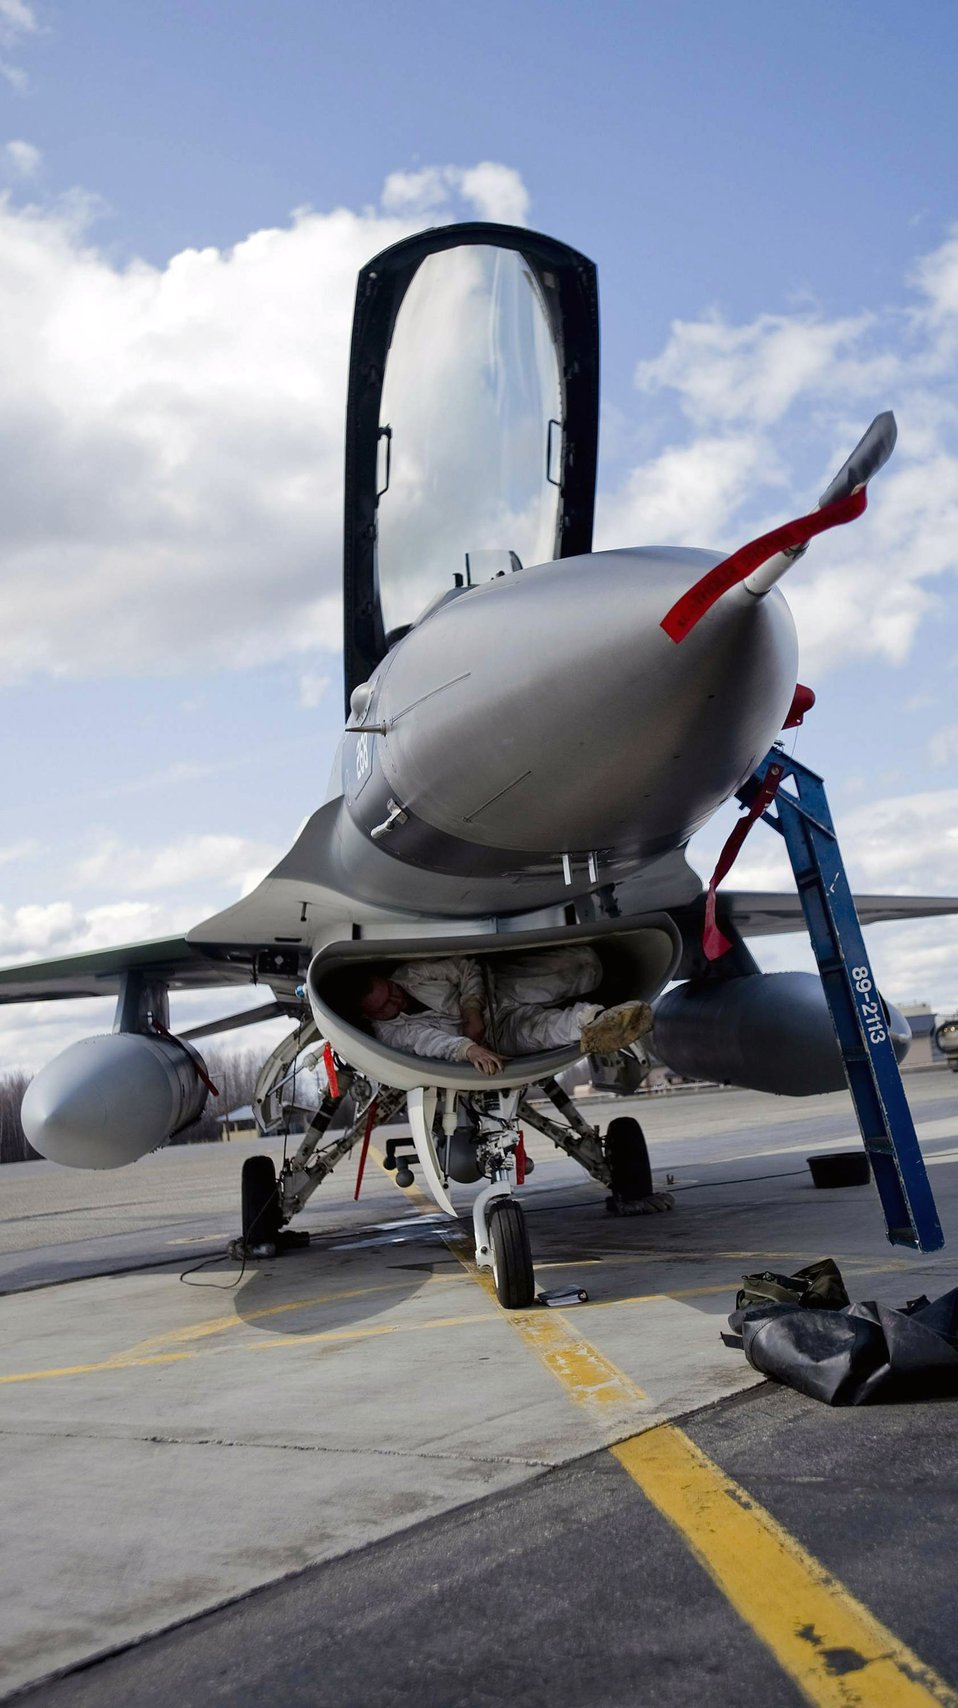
'Aggressive' training helps pilots outmaneuver enemy

Staff Sgt. Dustin Stewart crawls out of an F-16 Fighting Falcon intake after checking the fan blades for wear and tear May 8 at Eielson Air Force Base, Alaska. The aircraft belongs to the 18th Aggressor Squadron and is participating in Northern Edge 2008. Sergeant Stewart is a member of the 354th Aircraft Maintenance Squadron.